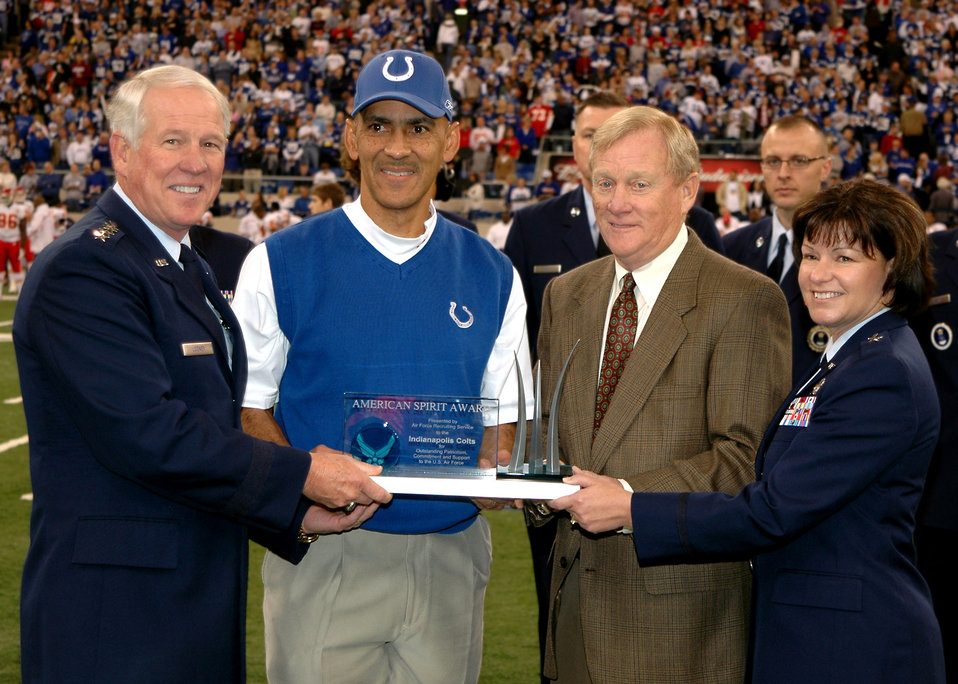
Air Force presents top civic award to Indianapolis Colts

Gen. William R. Looney III, Air Education and Training Command commander, and Air Force Recruiting Service commander, Brig. Gen. Suzanne M.